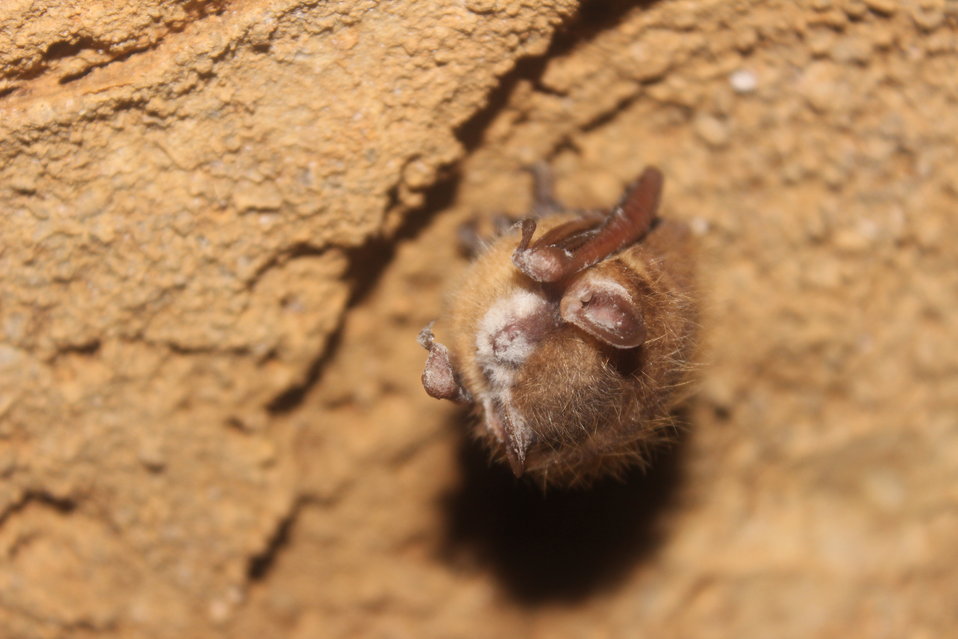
Tri-colored bat with visible WNS symptom